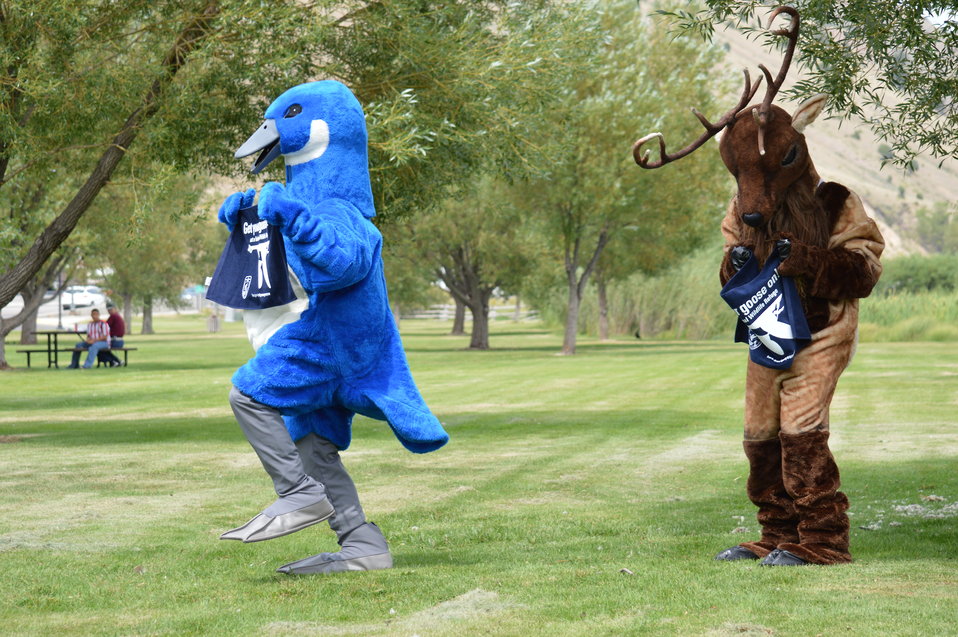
Get Your Goose On! - National Elk Refuge Style

On August 10, 2012 the U.S. Fish and Wildlife Service and Partners celebrated the 100 year anniversary of the establishment of the National Elk Refuge. In these photos, young attendees, along with Puddles the Blue Goose and the National Elk Refuge's mascot, showed us how to Get Your Goose On! with style.